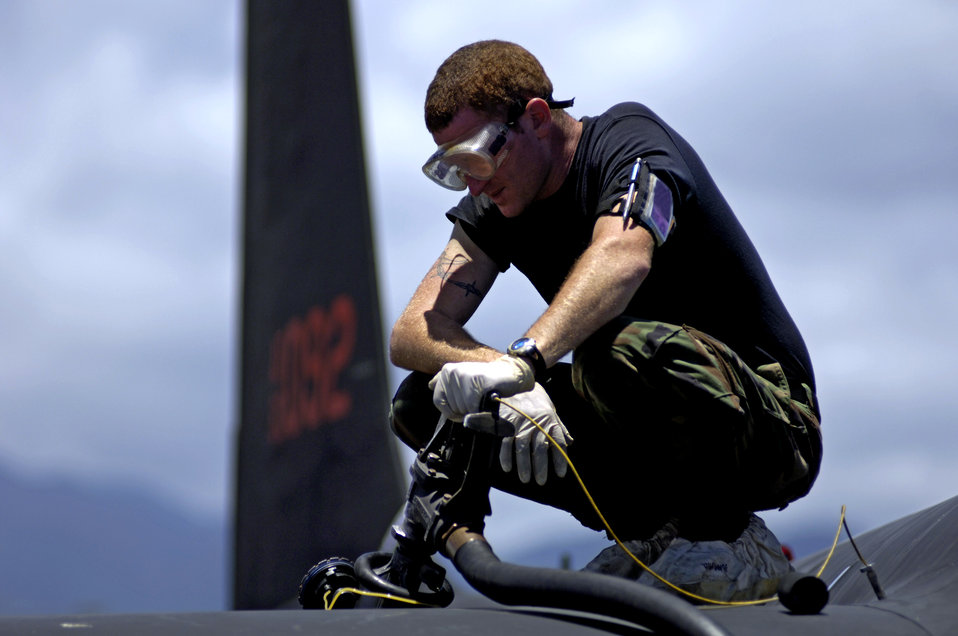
Dragon Lady face-lift

Senior Airman Justin Smith fuels a U-2 Dragon Lady at Hickam Air Force Base, Hawaii, on Tuesday, June 13. The aircraft is en route to South Korea. U-2s are undergoing a $1.5 billion upgrade. Cockpit instruments will be modernized with full-color displays that replace gauges and dials with state-of-the-art, touch-screen technology. Airman Smith is a crew chief from 9th Maintenance Squadron, Beale AFB, Calif.